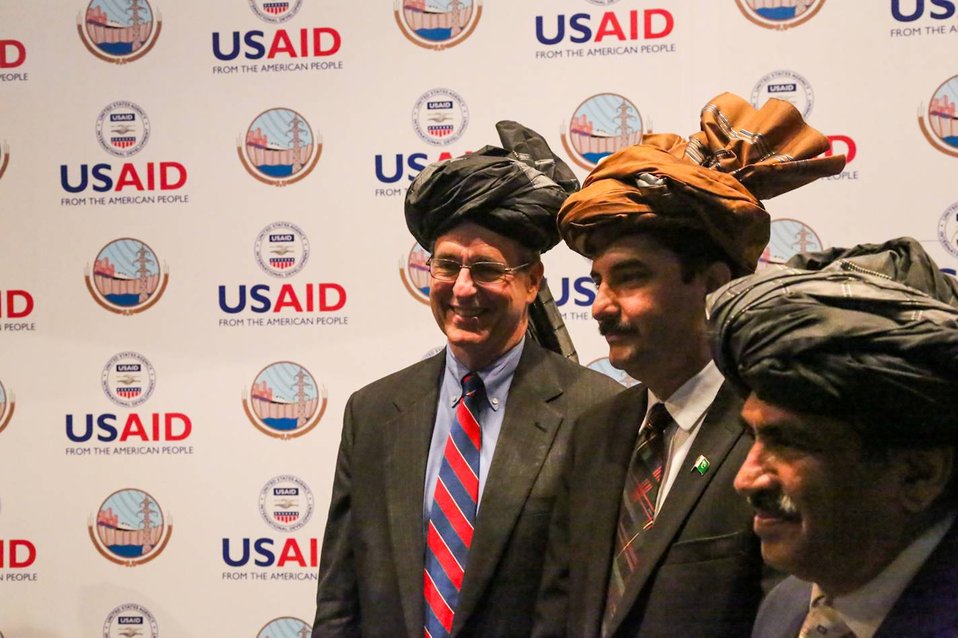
Islamabad, September 12, 2012 - Project Launch Ceremony of Waran Canal Irrigation System